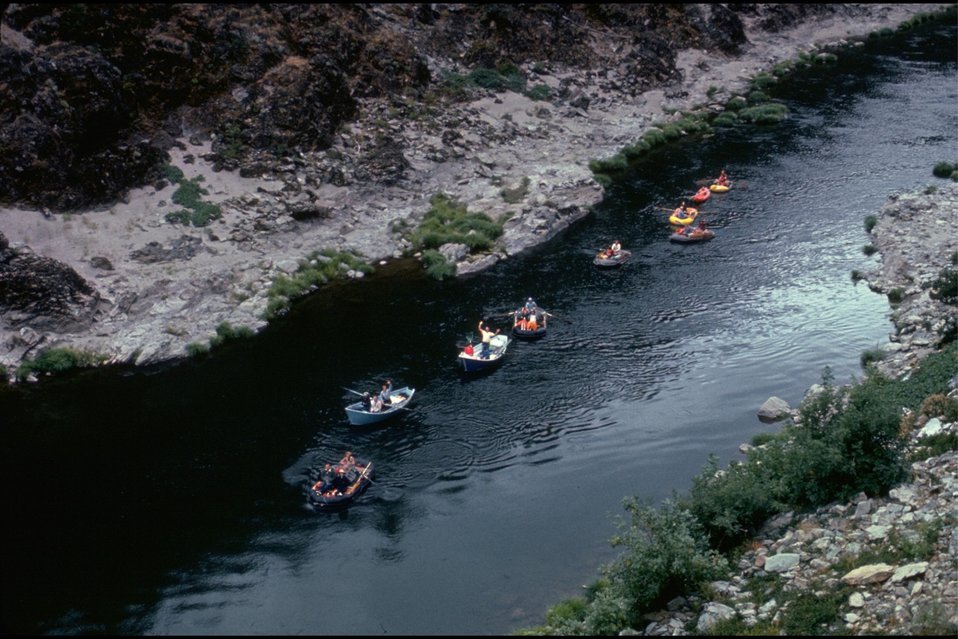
Rogue River - Rafts and drift boats floating on the Rogue River.